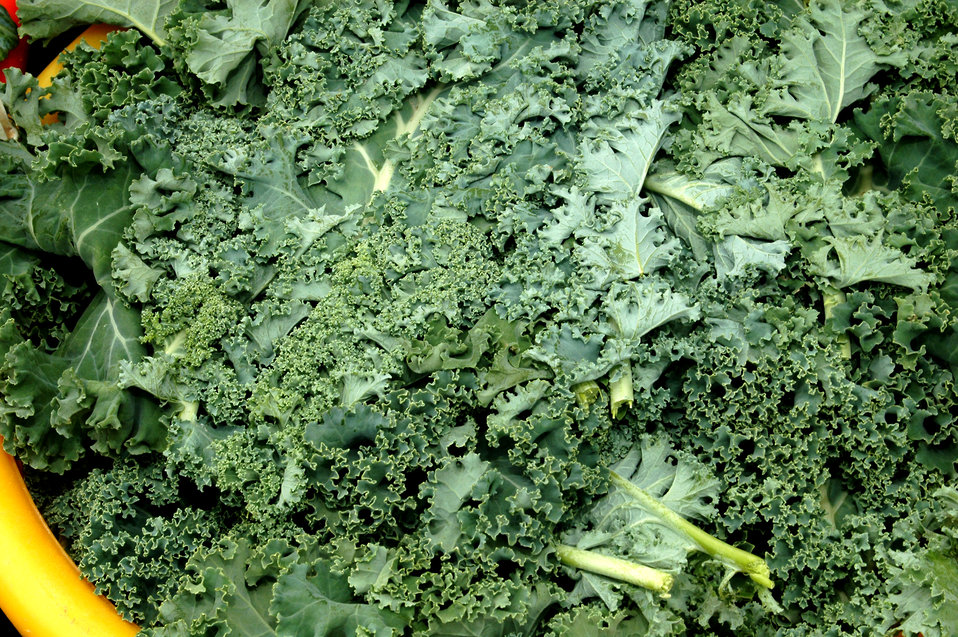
Kale for sale at the U.S. Department of Agriculture (USDA) Farmer’s Market held in the East parking lot of the USDA's Whitten Building in Washington, D.C. on June 2, 2006.